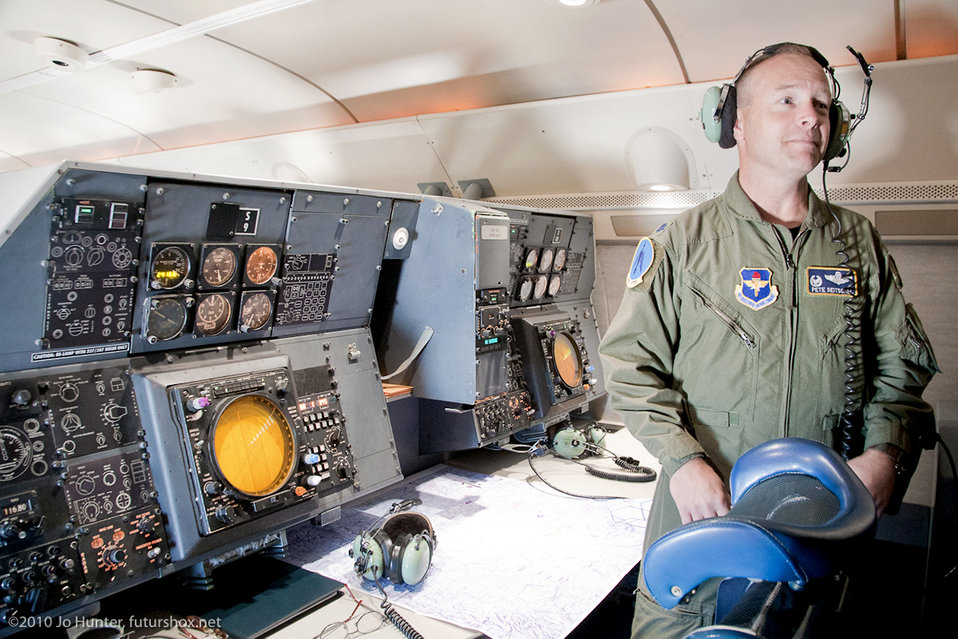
T-43 retirement

Lt. Col. Pete Deitschel stands in front of a combat systems officer training station Sept. 1, 2010, aboard a T-43. The T-43, a CSO training aircraft since 1973, was officially retired Sept. 17, 2010. Colonel Deitschel is the commander of the 562nd Flying Training Squadron.